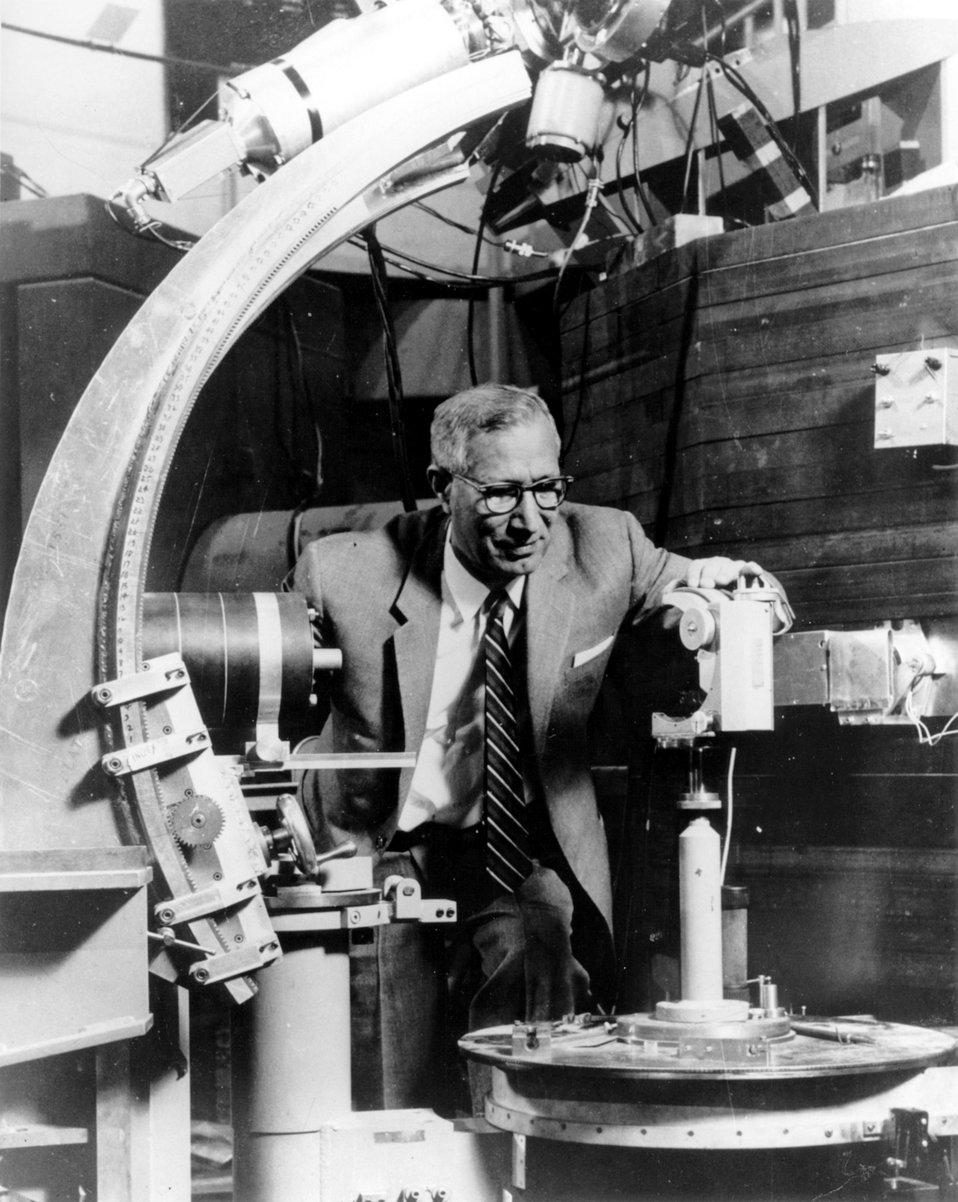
Solid state physicist studies radiation damage in graphite bombarded by accelerated ions.
c.1965